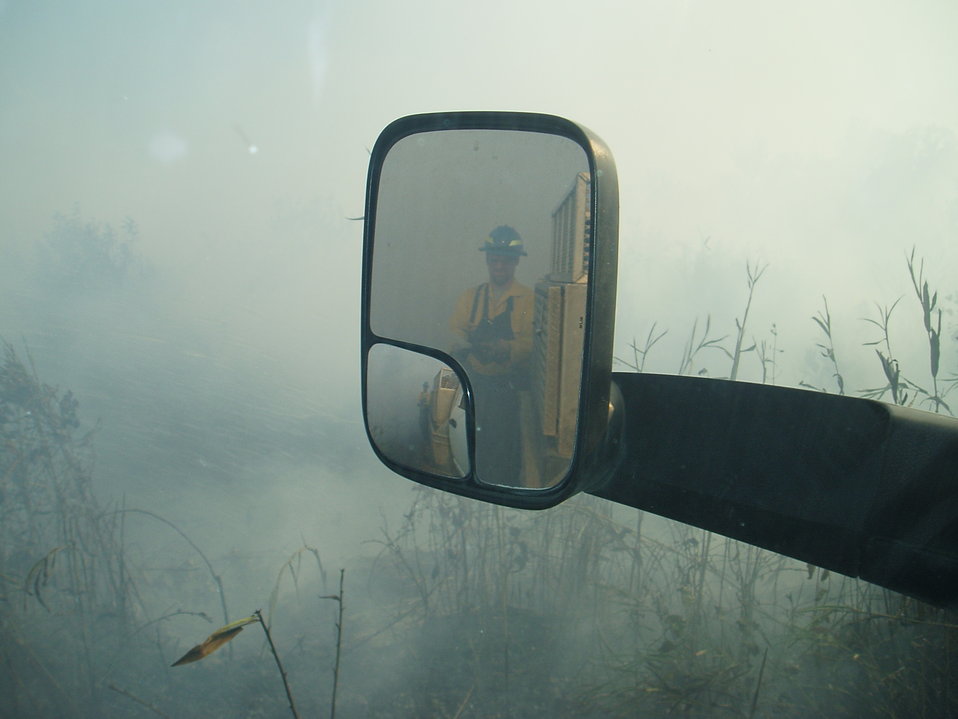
Firefighter reflection

Suffolk, VA, August 2011: The image of a firefighter int the rear view mirror of a fire engine working on the Lateral West Fire at Great Dismal Swamp National Wildlife Refuge .